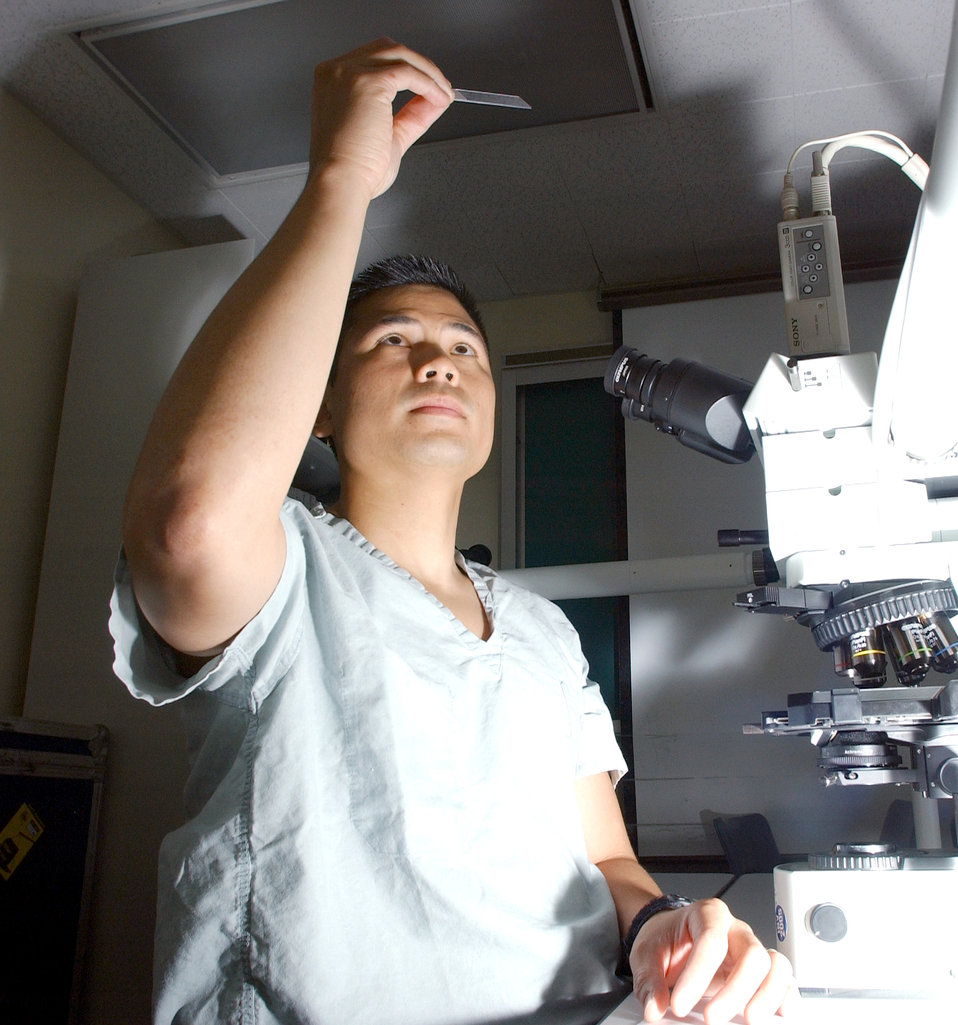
Maximum accreditation awarded to joint dermatology program

Capt. Oliver Wisco prepares a specimen slide for viewing under a microscope at the Wilford Hall Medical Center at Lackland Air Force Base, Texas, Aug. 27. Captain Wisco is a dermatology resident with 59th Medical Wing's dermatology clinic.